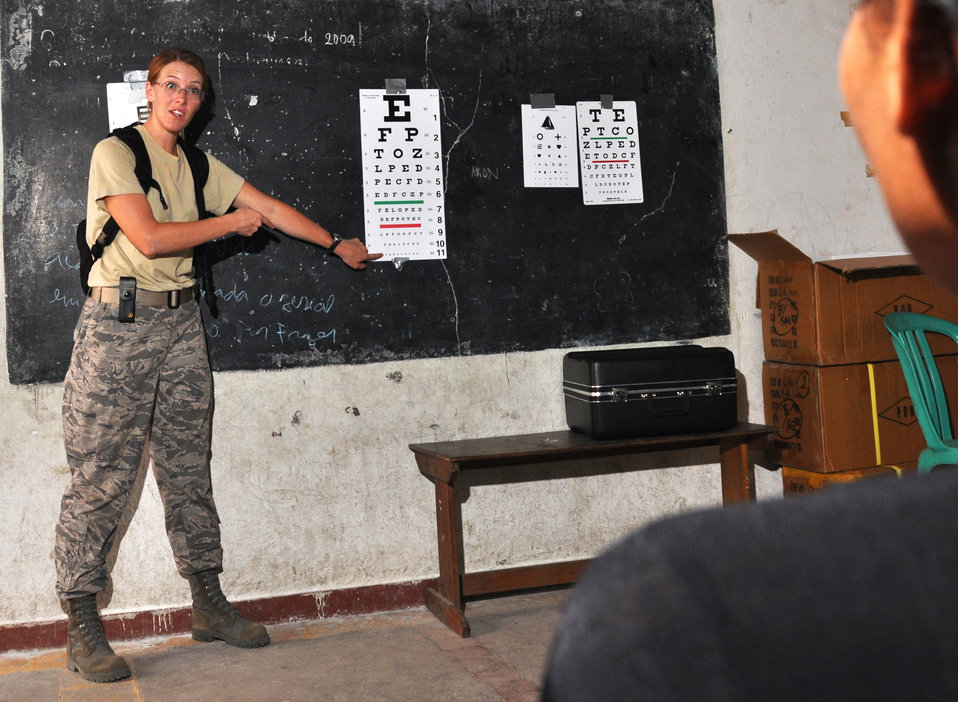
Airmen help hundreds in Timor Leste

Staff Sgt. Jacqueline Crimmins guides an East Timorese woman through an eye chart during a free examination at a clinic July 16 in Dili, Timor Leste. Sergeant Crimmins is an optometry technician assigned to the 51st Medical Group at Osan Air Base, South Korea. East Timorese and U.S. officials set up the clinic as part of Operation Pacific Angel 2009, a Pacific Air Forces humanitarian assistance operation led by 13th Air Force at Hickam Air Force Base, Hawaii.